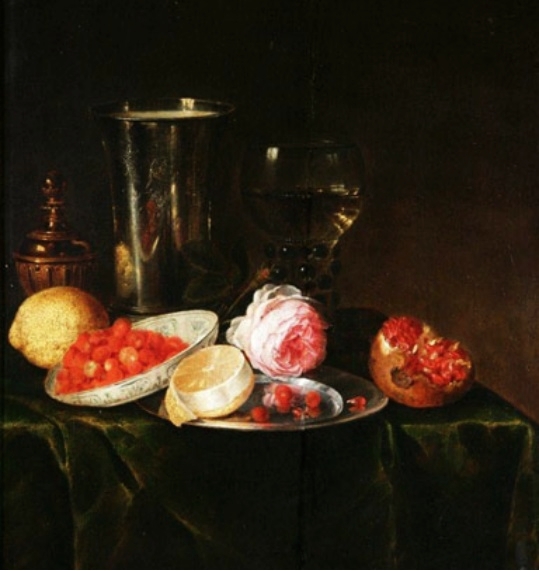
Luttichuys Still life with a rose